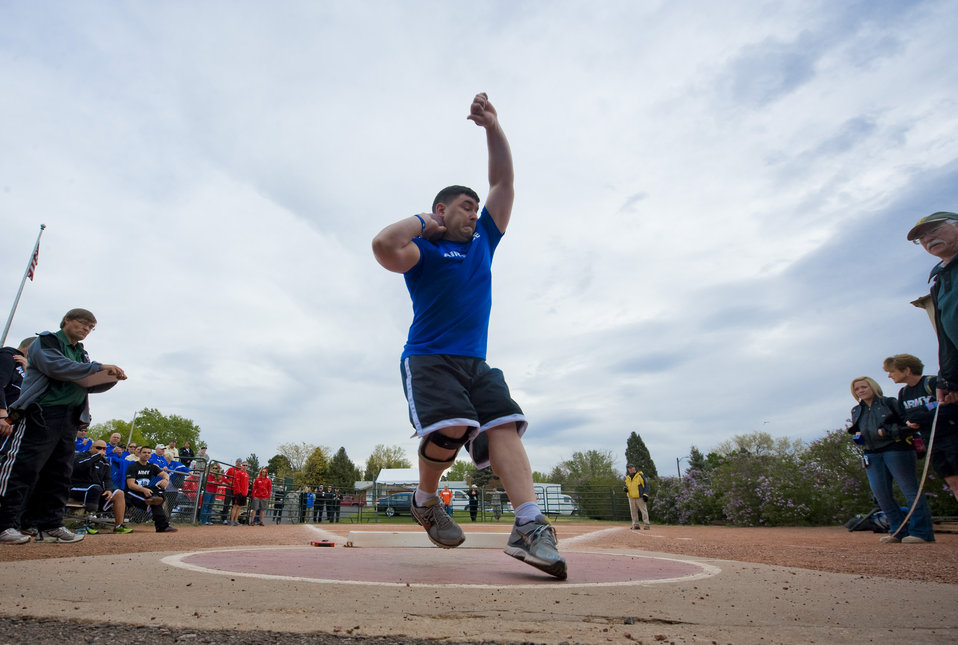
Warrior Games Track and Field

Air Force athlete Matthew Bilancia throws a shot put during the track and field competition May 17, 2011, at the 2011 Warrior Games in Colorado Springs, Colo. The track and field events kicked off the games, which continue throughout the week.